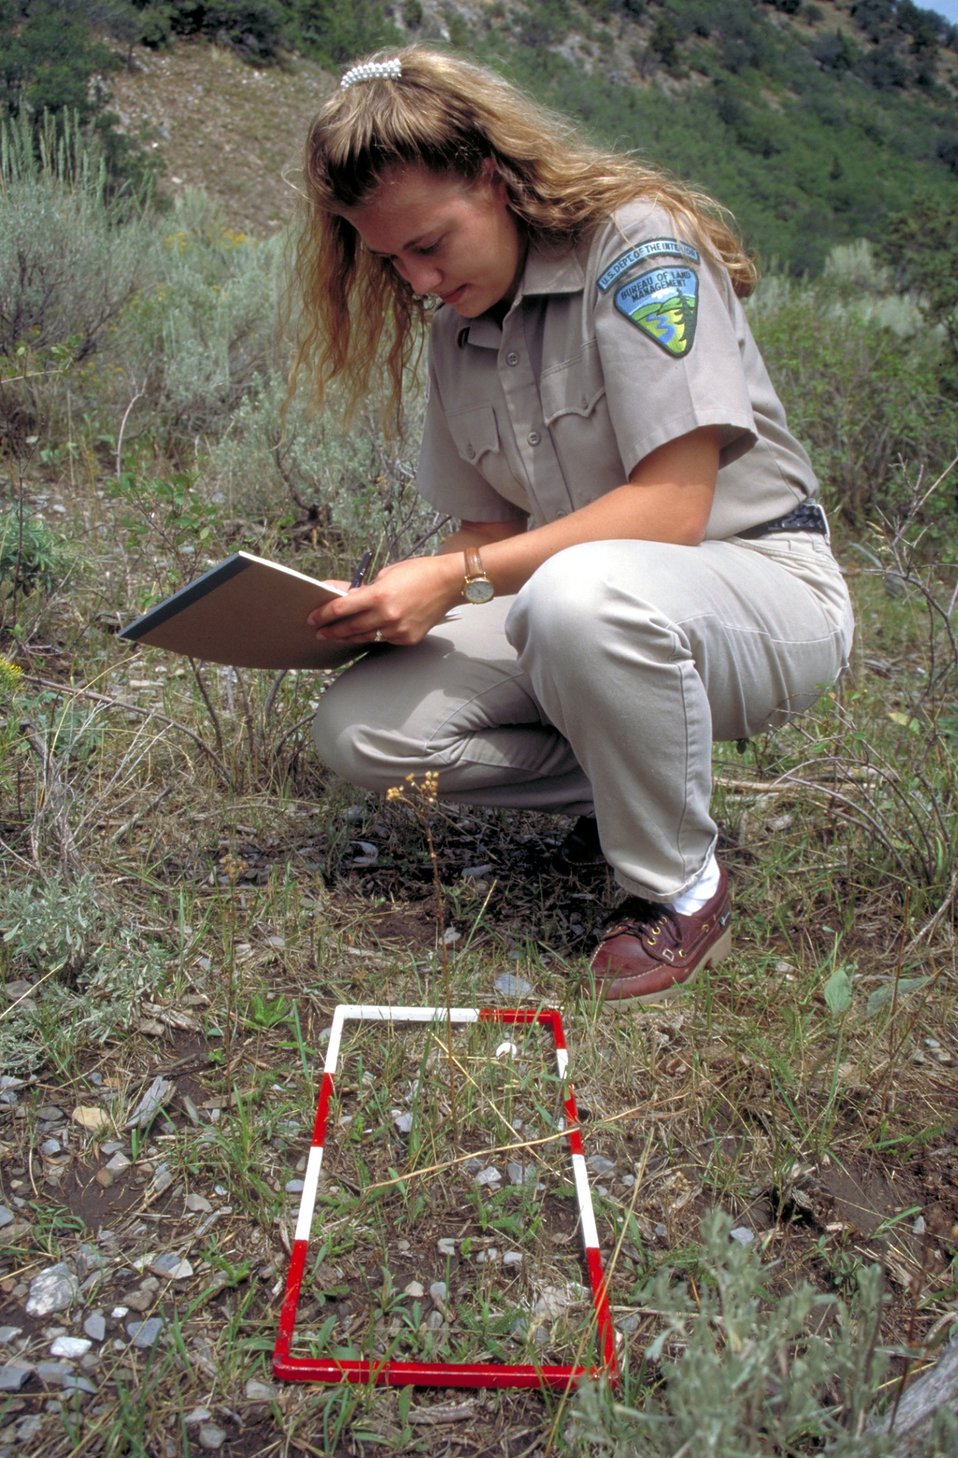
Range study in the West Desert of Utah.